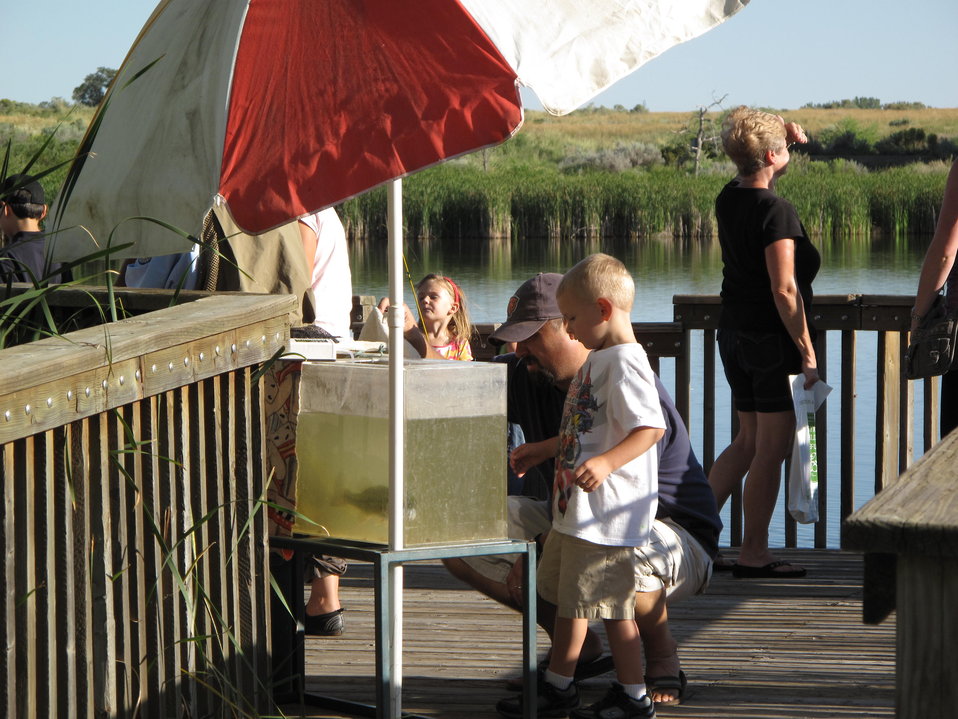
Fishing at the Rocky Mountain Arsenal

This tank is where all the children's fish were kept.